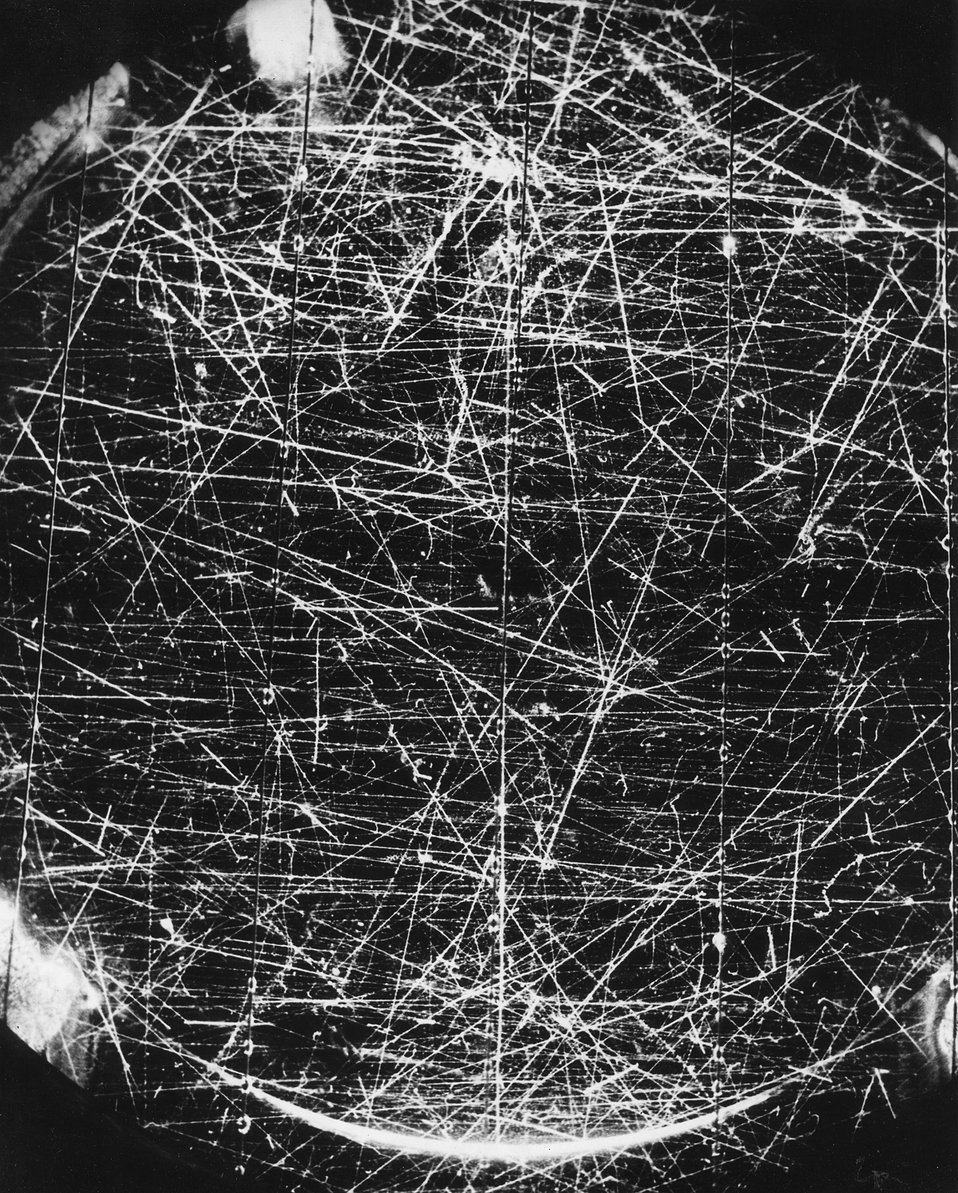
Billion-volt atomic particles in Brookhaven Cosmotron. c. 1957